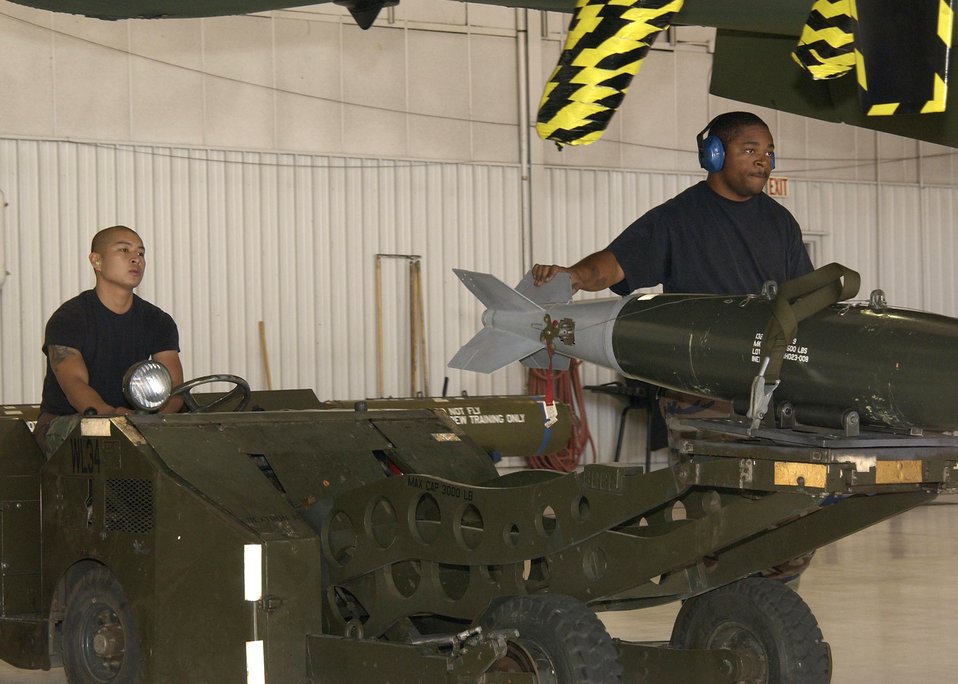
Load crew competition

Staff Sgt. Jevon Charles guides the missile as Airman First Class Bho DeLosSantos drives it to an A-10 Thunderbolt II during the 355th Wing